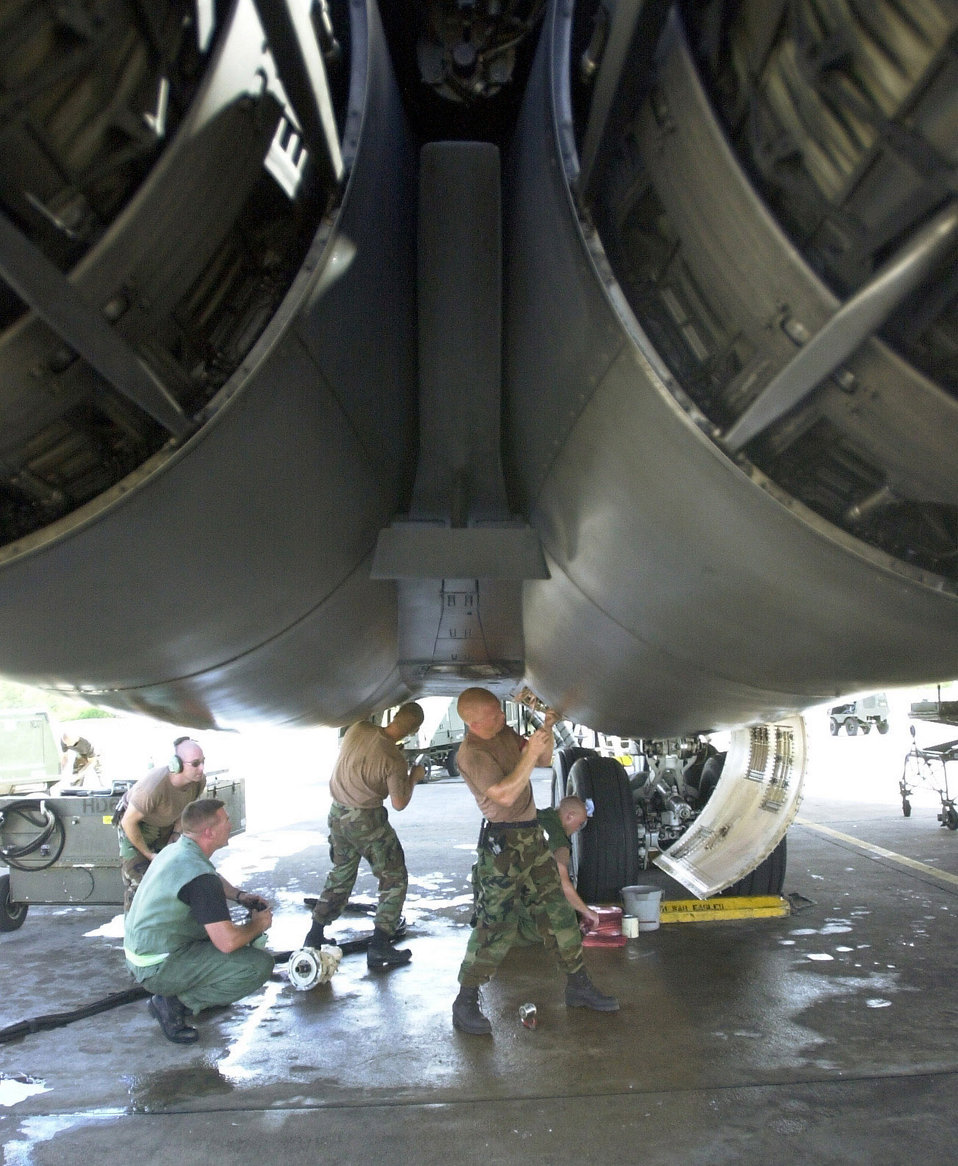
B-1B Lancer

OPERATION ENDURING FREEDOM -- Air Force crew chiefs from the 28th Air Expeditionary Wing service a B-1B Lancer engine. The B-1B holds several world records for speed, payload and distance. The National Aeronautic Association recognized the B-1B for completing one of the 10 most memorable record flights for 1994. The B-1B was first used in combat in support of operations against Iraq during Operation Desert Fox in December 1998.